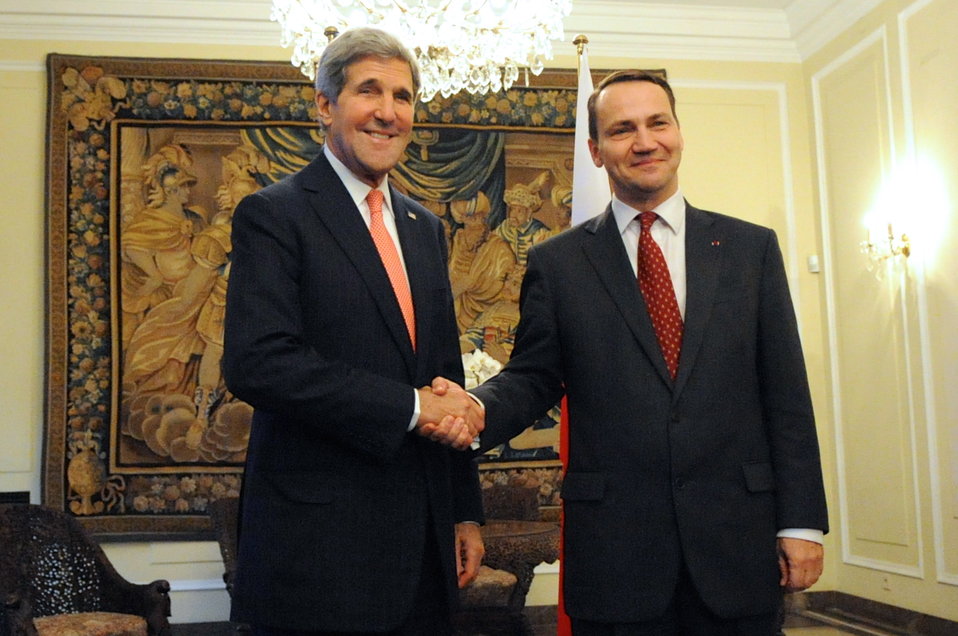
Secretary Kerry and Polish Foreign Minister Sikorski Pose for a Photo

U.S. Secretary of State John Kerry and Polish Foreign Minister Radoslaw Sikorski pose for photographers before a meeting at the Foksal Palace in Warsaw, Poland, on November 5, 2013.